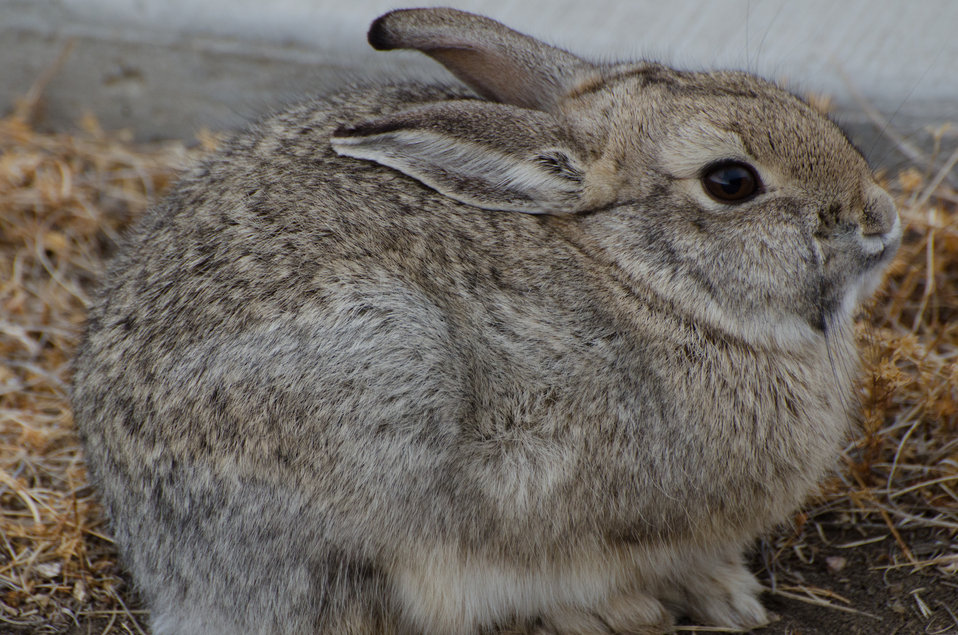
COTTONTAIL @ FERRETVILLE

Cottontail rabbit at the National Black-footed Ferret Conservation Center in Colorado.